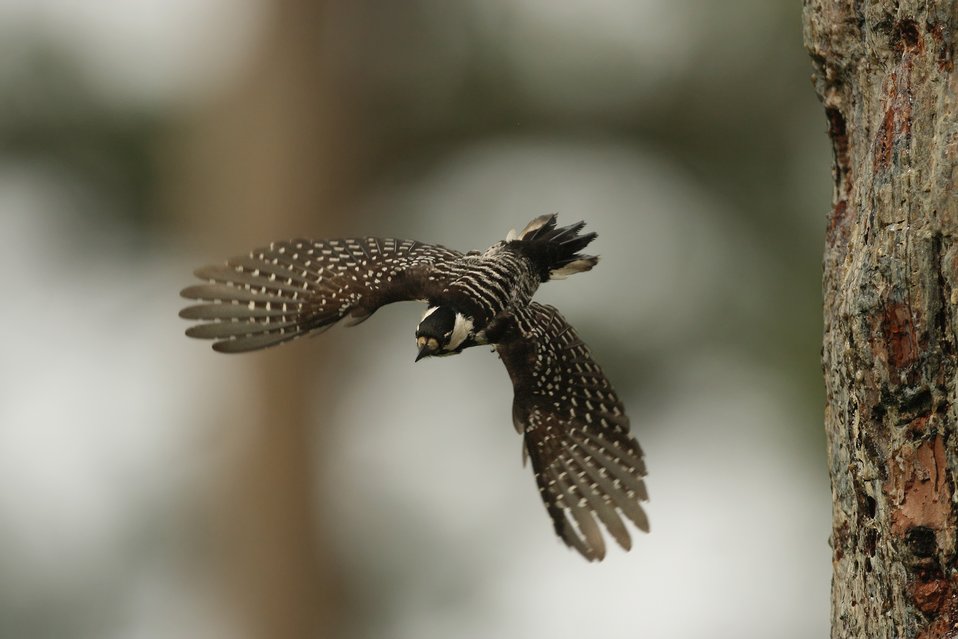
Red Cockaded Woodpecker

A Red-cockaded woodpecker flies from its natural nest cavity on the Francis Marion National Forest in September, 2009. (Martjan Lammertink/U.S. Forest Service)